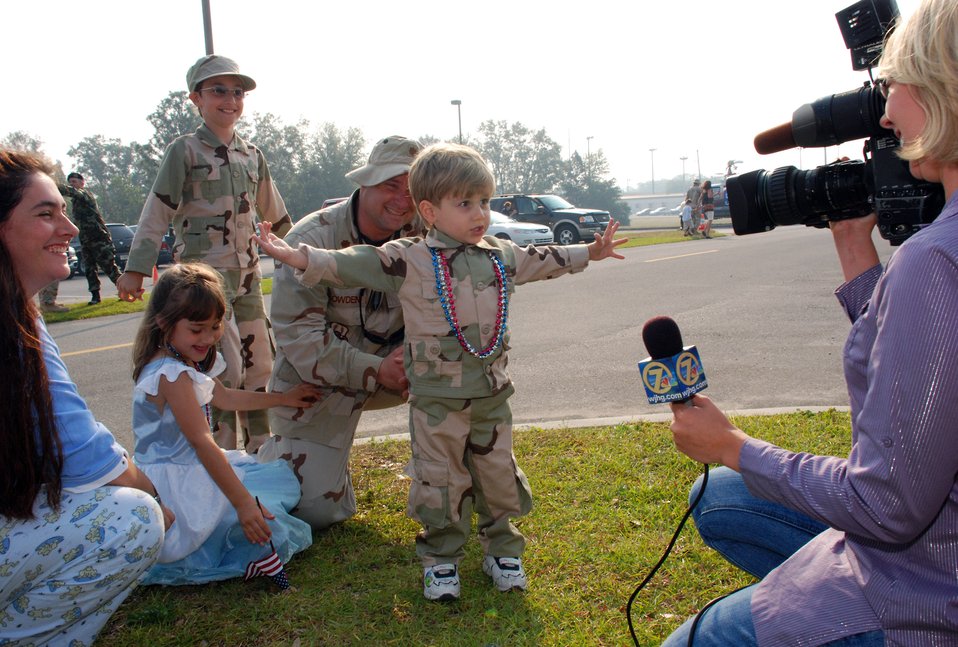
Eglin Airmen return from deployment

Ian Bowden, 2, spreads his hands as wide as he can to illustrate to a local news reporter how big the fish his dad, Maj. Cooper Bowden, is going to catch on their upcoming fishing trip during a homecoming celebration May 24 at Eglin Air Force Base, Fla. Family members gathered at Eglin AFB to welcome home more than 175 members of the 728th Air Control Squadron from a deployment in support of Operation Iraqi Freedom.